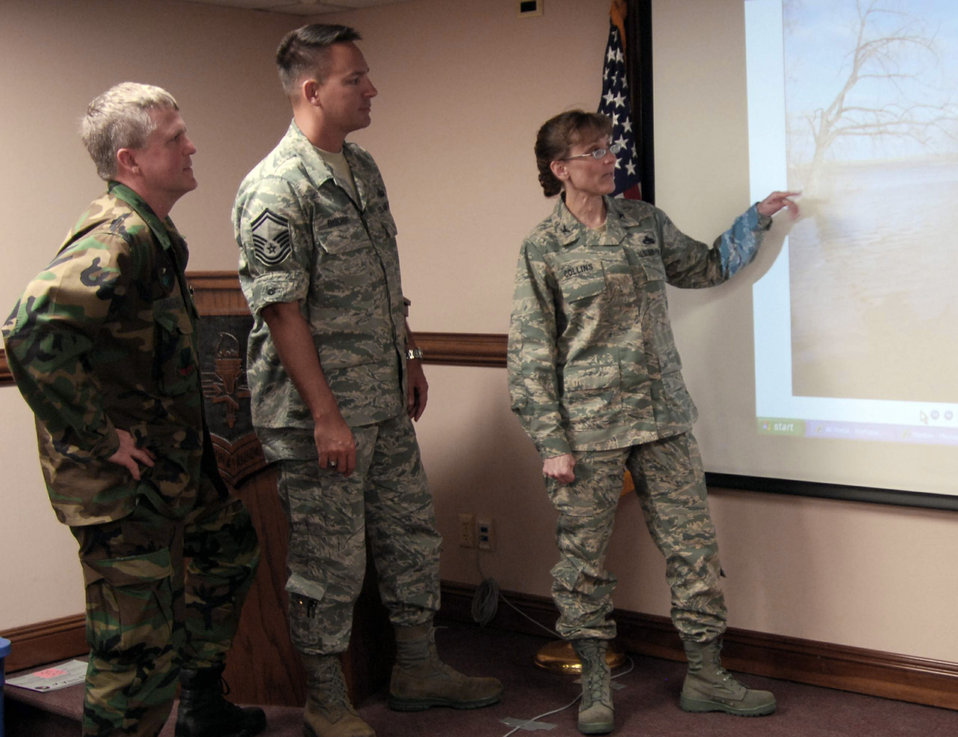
North Dakota flood tests Air Force EPLOs

Col. Stacy Collins (right), an Air Force emergency preparedness liaison officer, discusses the North Dakota flood situation with Col. Jon Spangler and Senior Master Sgt. Brian Bischoff, all of whom attended a recent EPLO orientation at Tyndall Air Force Base, Fla.